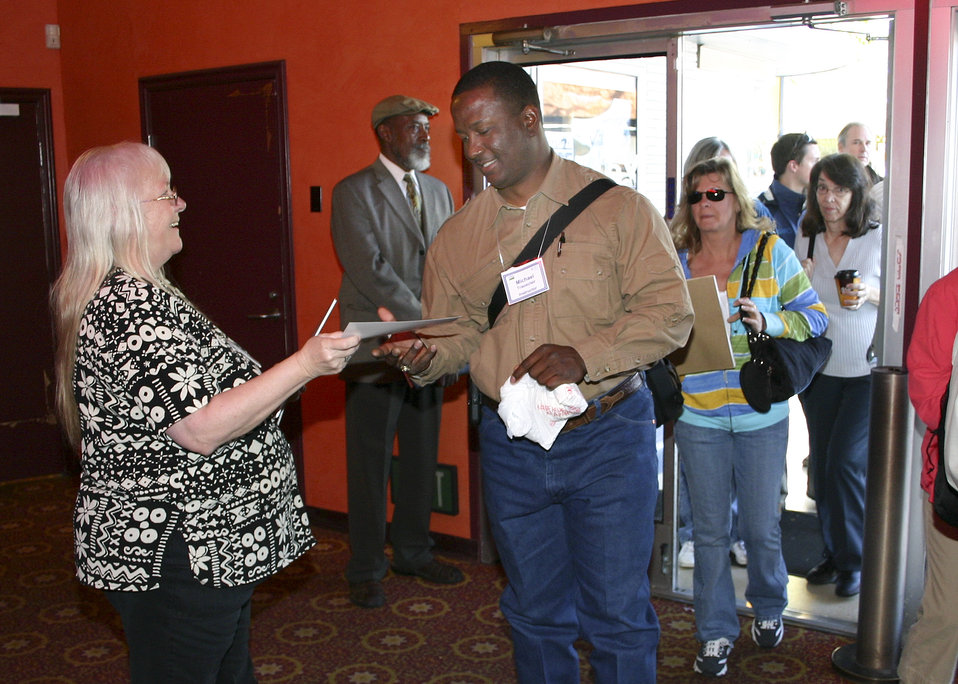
10di1298-Davis Cultural Trans 010

The U.S. Department of Agriculture (USDA) held the Cultural Transformation Employee listening sessions in Davis, CA, on Monday, April 12, 2010. USDA employees expressed their concerns with issues at the Department and made suggestions for correcting them and improving the image of USDA. USDA photo 10di1298-010.